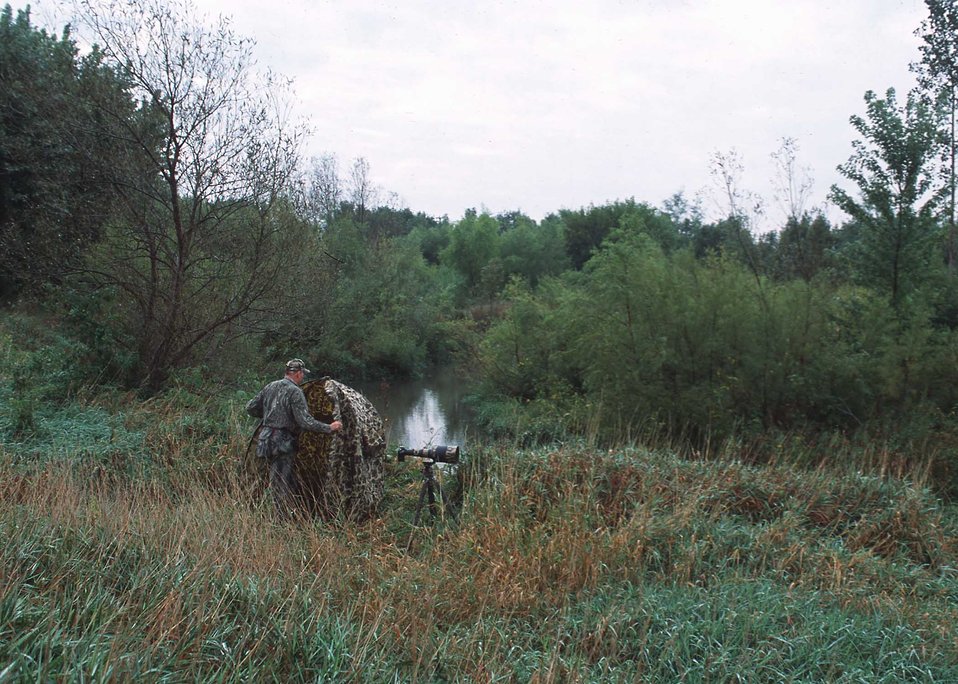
A wetland area and conservation buffer make for excellent wildlife and wildlife photography along Bear Creek in central Iowa.